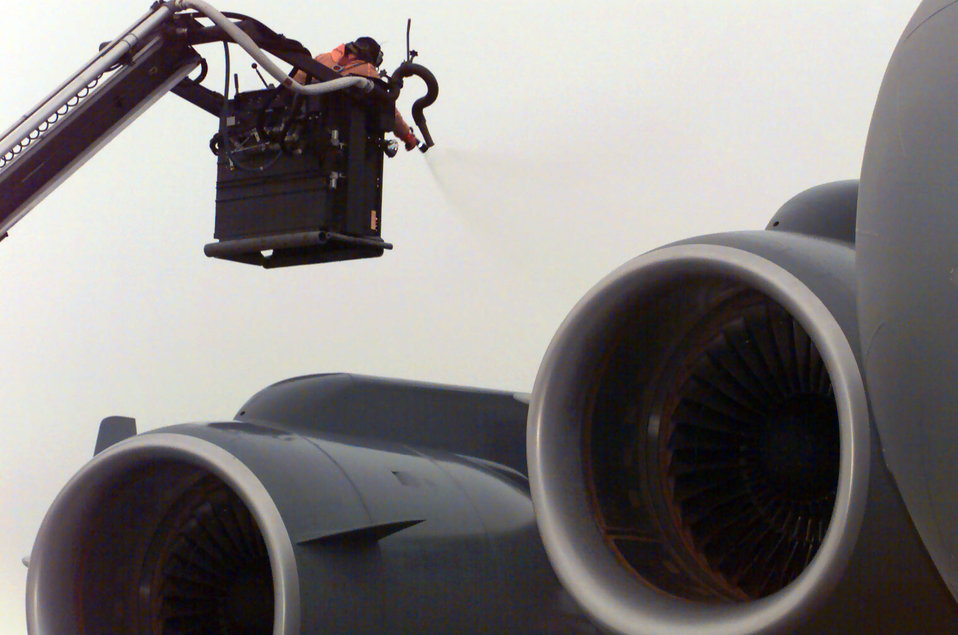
De-icing

ELMENDORF AIR FORCE BASE, Alaska -- Senior Airman Jaime Dusick, 632nd Air Mobility Support Squadron, sprays anti-icing fluid on a C-17 Globemaster III to keep the aircraft flying in freezing winter temperatures.